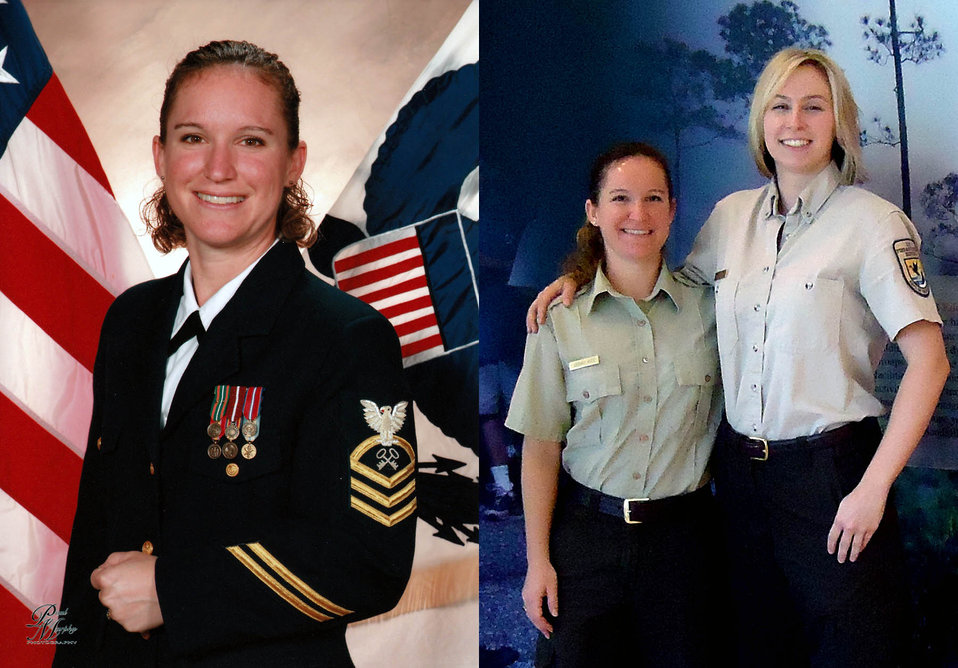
Sarah Hite and Kelly Ferguson

Sarah Hite (left) Photo: taken at the USCG Chief Petty Officer Academy in 2009 with the E7 rank. (right photo) Sarah with sister-in-law Kelly Ferguson, who is a Bio Science Tech for USFWS..
.
Senior Chief Petty Officer (E8) Sarah Hite entered the U.S. Coast Guard in October 2000. She served four years of active duty in Kodiak, Alaska at Port Services as a non-rate and at the Air Station as a storekeeper. She entered the U.S. Coast Guard Reserve in 2004 and drilled in Tok, Alaska until she was recalled to active duty under Title 10 orders for Operation Iraqi Freedom. She served on active duty at Marine Safety Unit Port Arthur, TX from 2007 to 2008. She demobilized and continued to support the outload mission for Port Arthur during drills until she transferred to U.S. Northern Command (NORTHCOM) at Peterson AFB, CO from 2010 to 2012, where she worked in the joint logistics operation center. Now she reports to CG Base New Orleans, LA as the deputy chief of reserve operations..
.
While in the Reserves, Sarah worked for The Boeing Company at Fort Greely, AK and for Raytheon Company at White Sands Missile Range, NM as a logistics specialist. She entered government service as the administrative officer for the U.S. Fish and Wildlife Service’s Gulf Coast Complex at Mississippi Sandhill Crane NWR in Gautier, MS August 2011. .
.
Hite’s professional awards include three Coast Guard achievement medals, a joint service commendation medal, several unit and team commendation ribbons, the global war terror service medal, armed forces reserve medal, four good conduct medals, and numerous contractor/civilian performance awards.